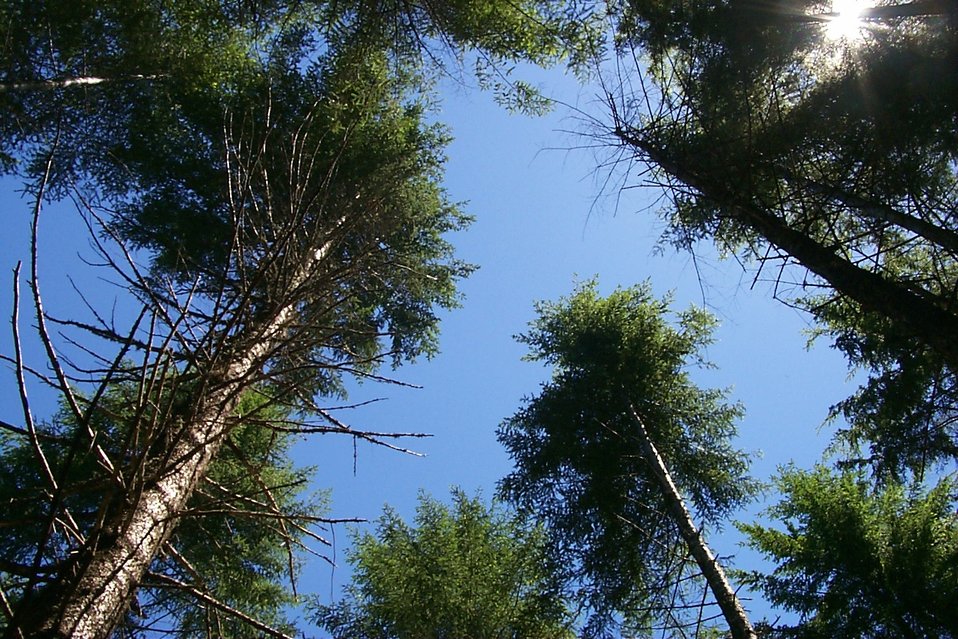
Camas East Timber Sale in Late Successional Reserve.